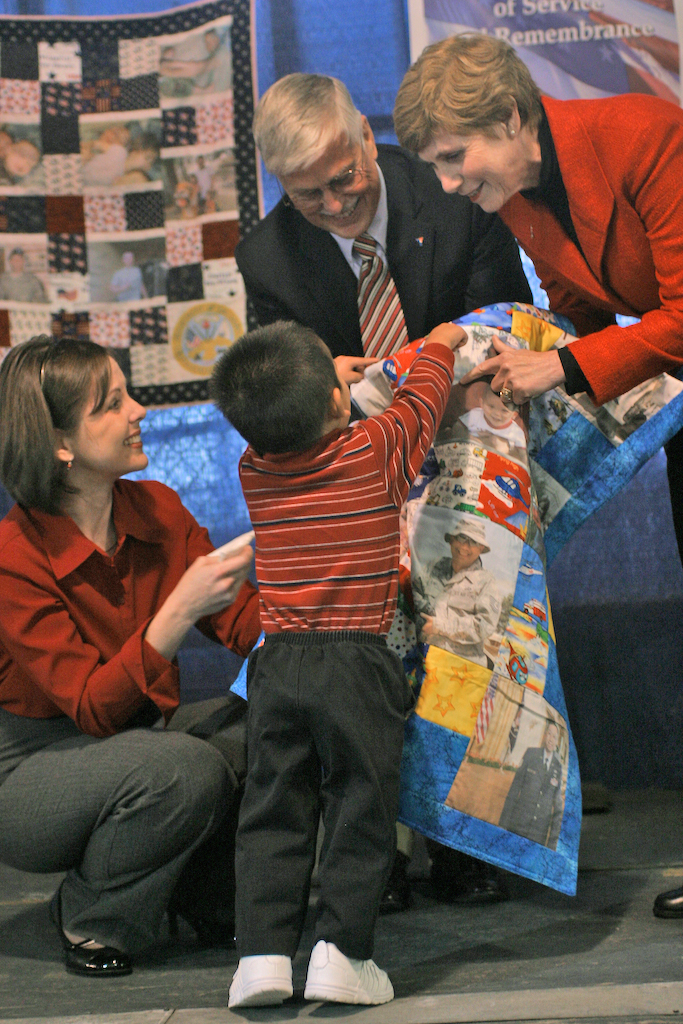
Sew much support

Sue Mullen, wife of Chairman of the Joint Chiefs of Staff Adm. Mike Mullen, joins Mike Landers, deputy national director of the Armed Forces YMCA in presenting an Operation Kid Comfort quilt to Nathan Jung and his mother, Cathy Jung. Quilts feature family photos and are delivered to the families of deployed service members about three months into a deployment.